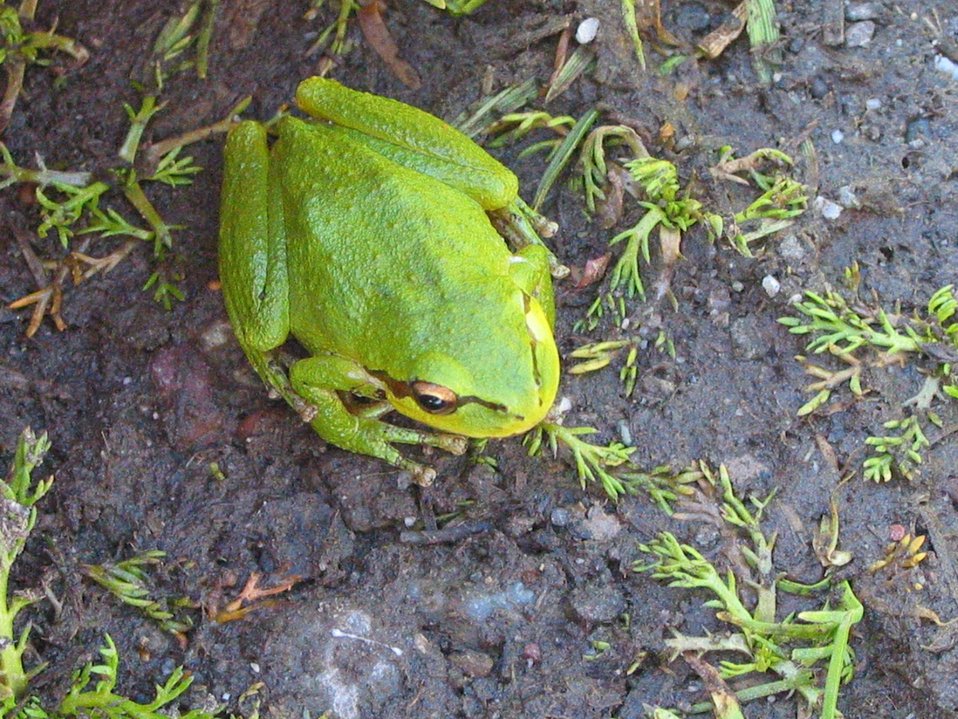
Pacific treefrog with missing eye.

(USFWS)